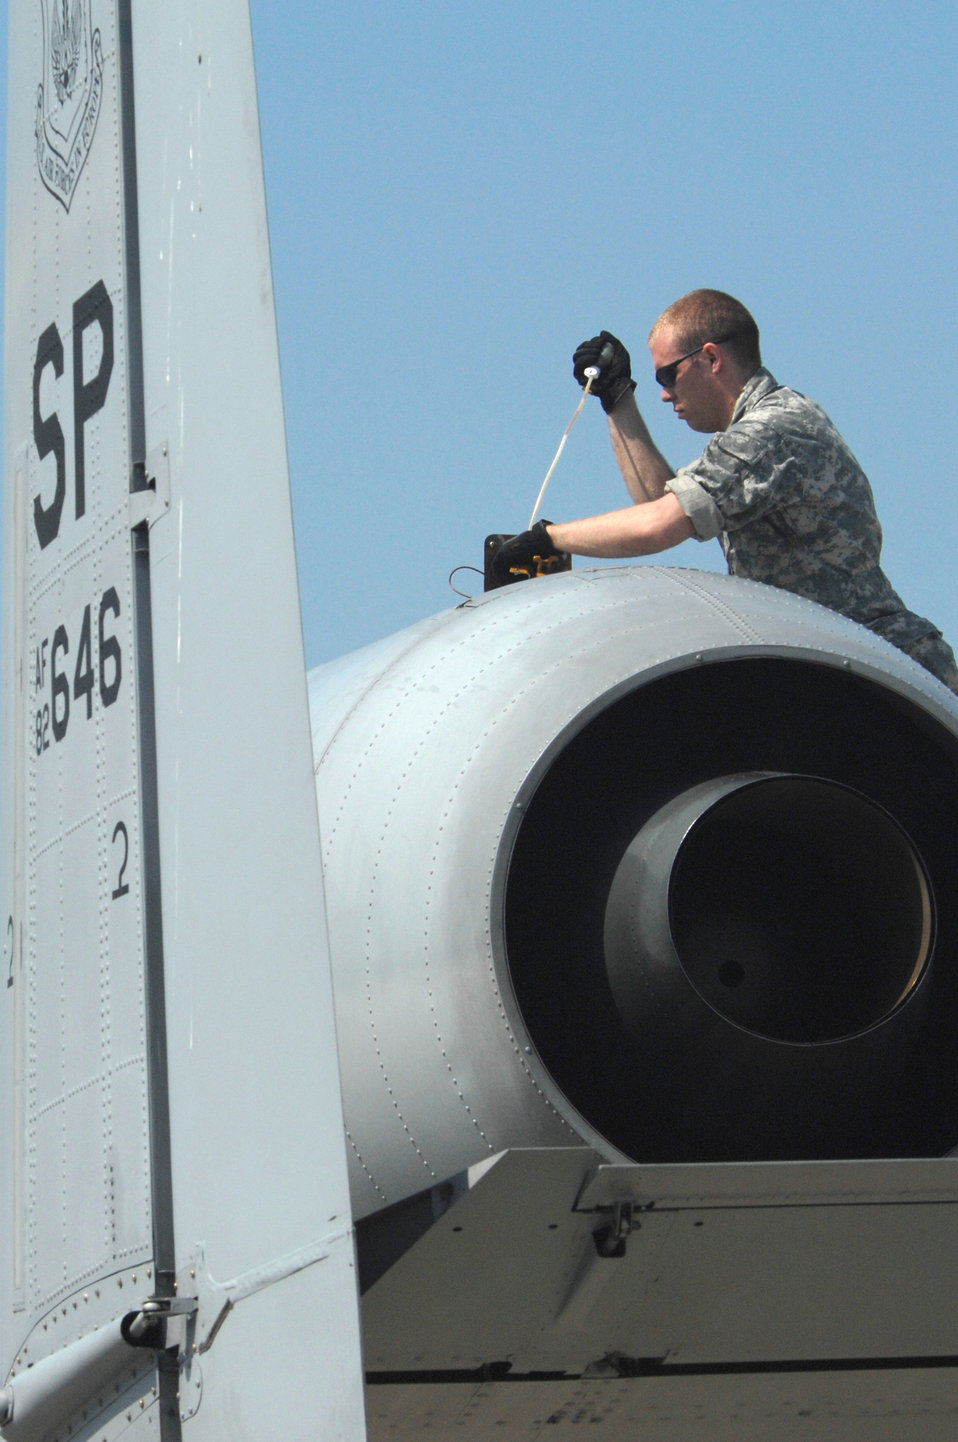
Airmen turn empty Bulgarian hangar into A-10 hub

Airman 1st Class Josh Stubstad inspects the engine of an 81st Fighter Squadron A-10 Thunderbolt II April 16 at Bezmer Air Base, Bulgaria. A maintenance squadron team deployed to Bezmer AB to support Exercise Reunion April 2009. Airman Stubstad is a 52nd Equipment Maintenance Squadron crew chief from Spangdahlem Air Base, Germany.